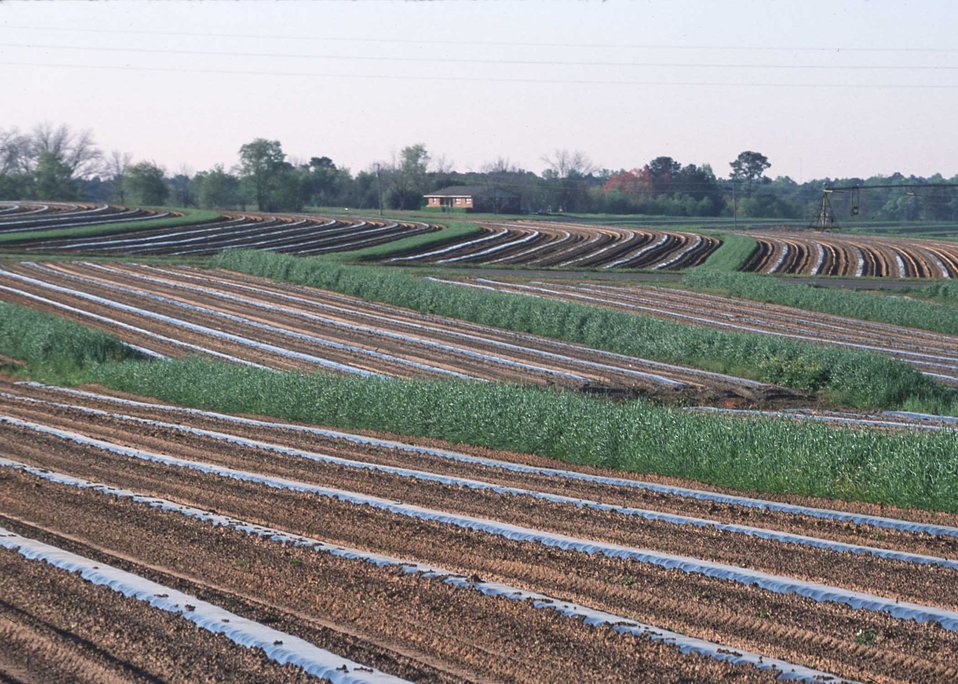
Contour farming, terraces and rye grass field strips. Tifton, GA.